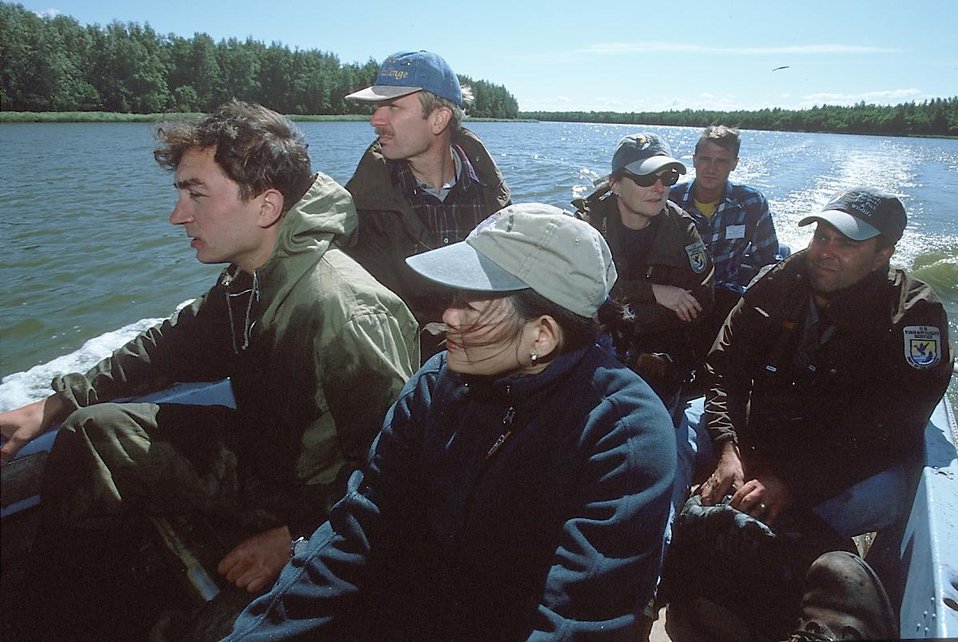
Ride on Oozera Dolga

U.S. team visits Lake Dolgoe at Khingansky Nature Reserve, Russian Far East.